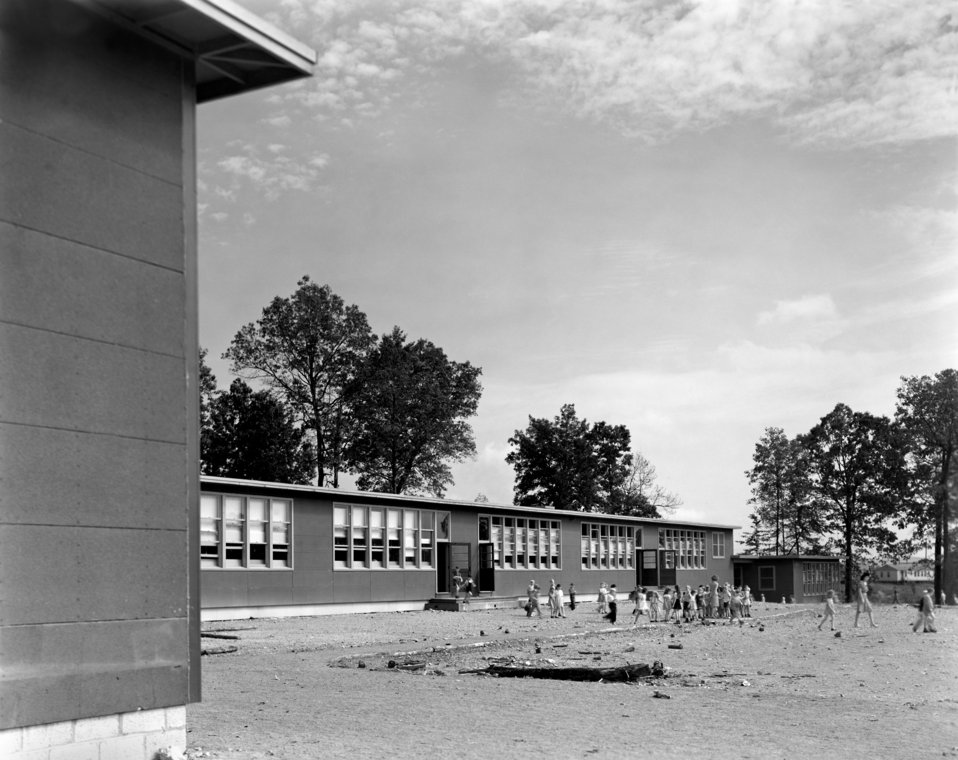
Highland View School Oak Ridge 1944

S-40 DOE photo Ed Westcott 1944 Oak Ridge Tennessee